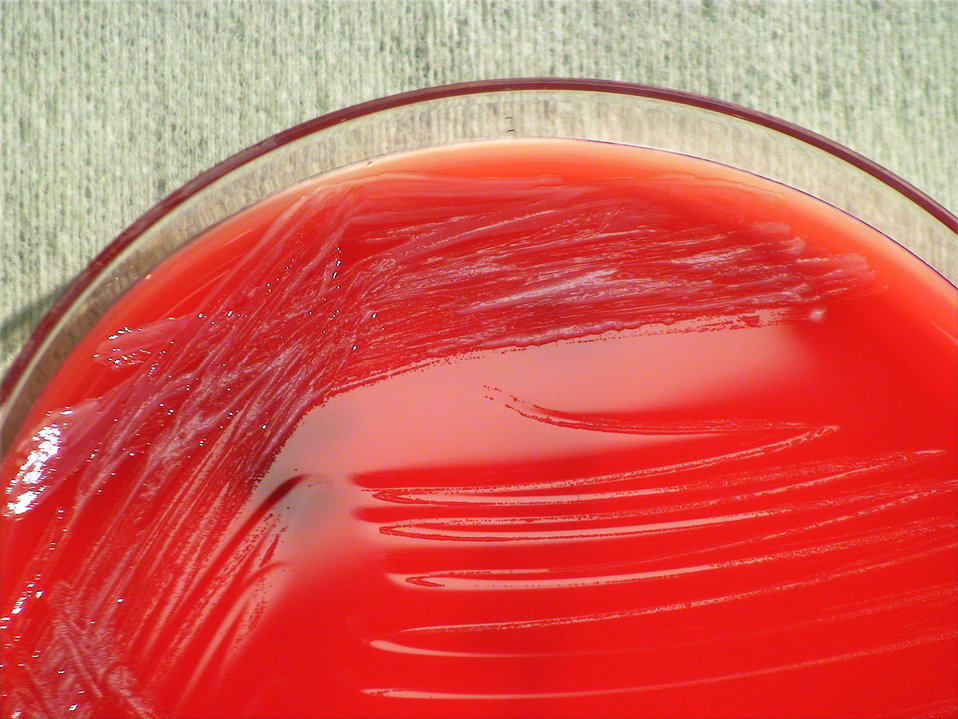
This photograph depicts the colonial morphology displayed by Gram-negative, Bordetella bronchiseptica bacteria, which was grown on a medium of sheep's blood agar (SBA), for a 24 hour time period, at a temperature of 37�C. See PHIL 12395 and 12396 for views of these bacterial colonies after 48 hours of growth.